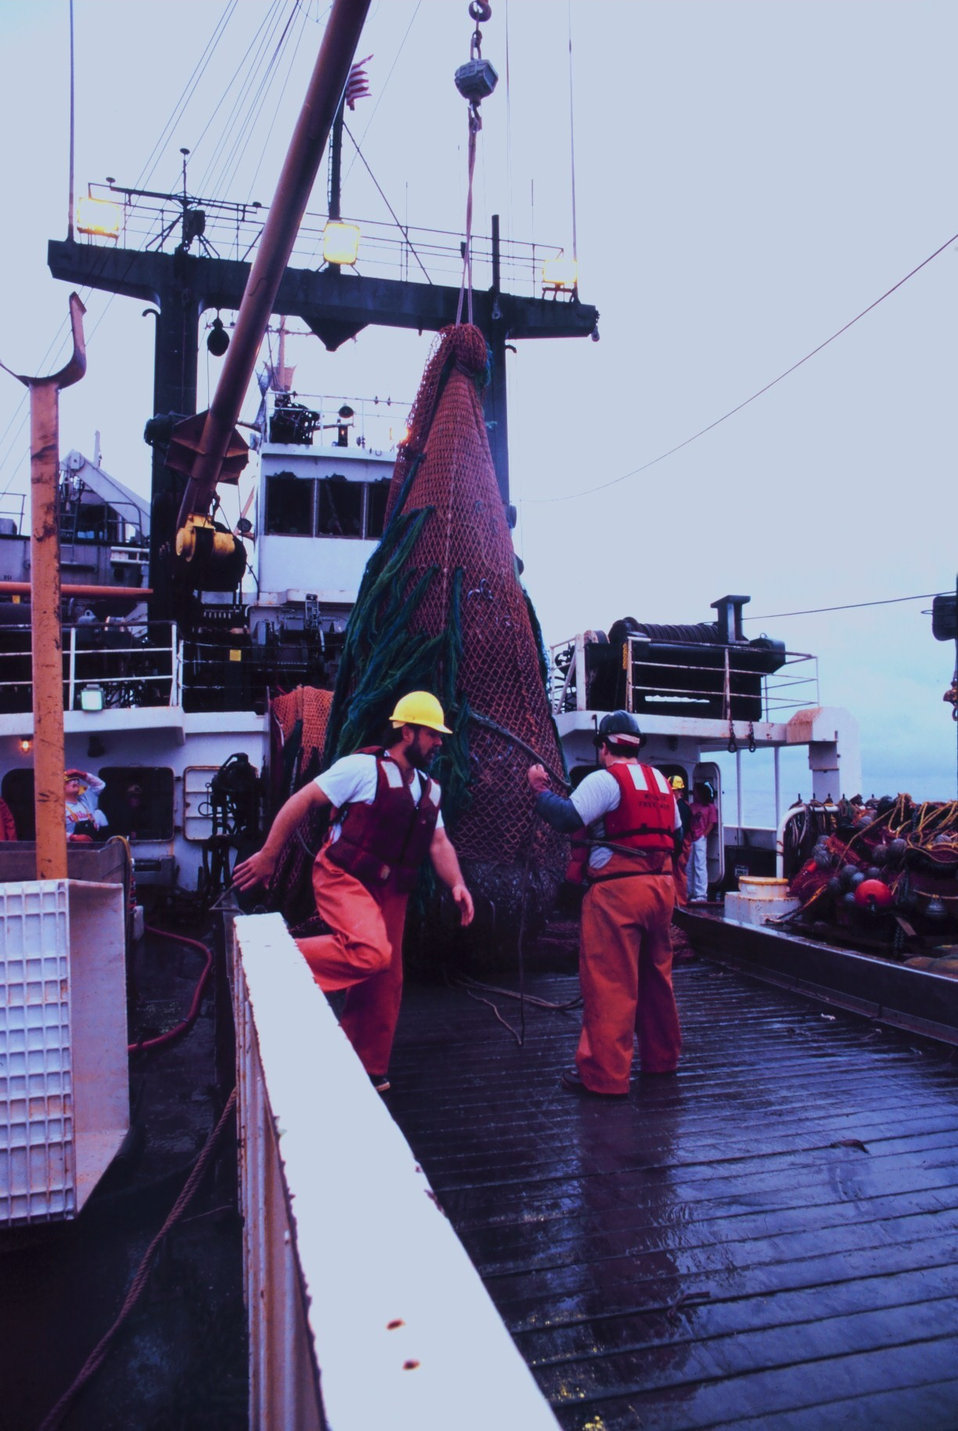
Trawling operations on the MILLER FREEMAN. A full net-load of fish brought aboard. The cod end is being lifted. It will be dumped in the checker, i.e, the sorting table.